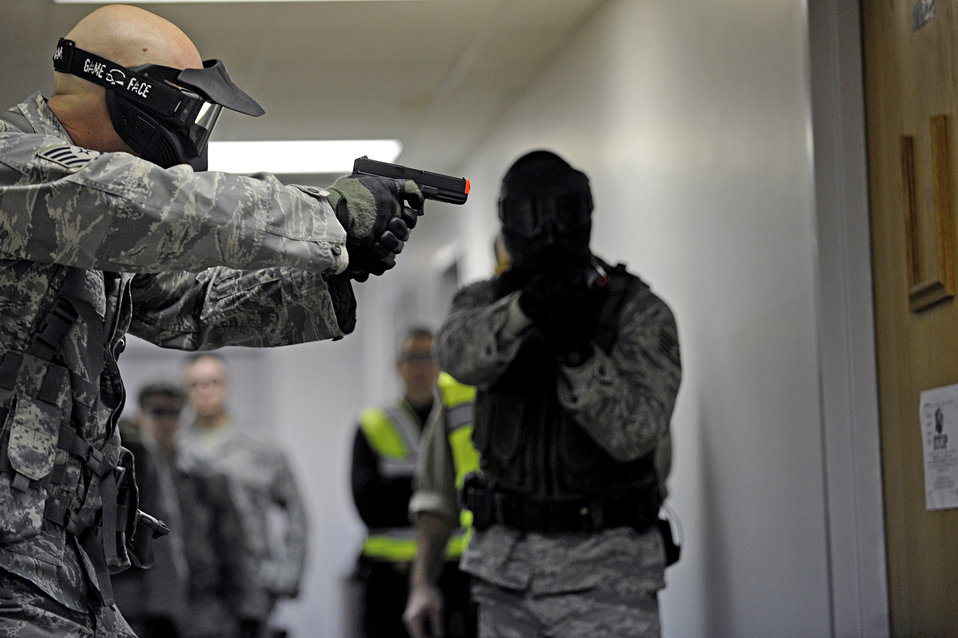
Ellsworth Airmen participate in training with local sheriff's department

Staff Sgt. Joseph Vawter (left) and Staff Sgt. Alston Alexander clear a room during an armed threat exercise, Jan. 25, 2010, at Ellsworth Air Force Base, S.D. Airmen received specific training from the Pennington County Sheriff's Department special response team to neutralize the threat as quickly as possible. Sergeants Vawter and Alexander are 28th Security Forces Squadron team members.